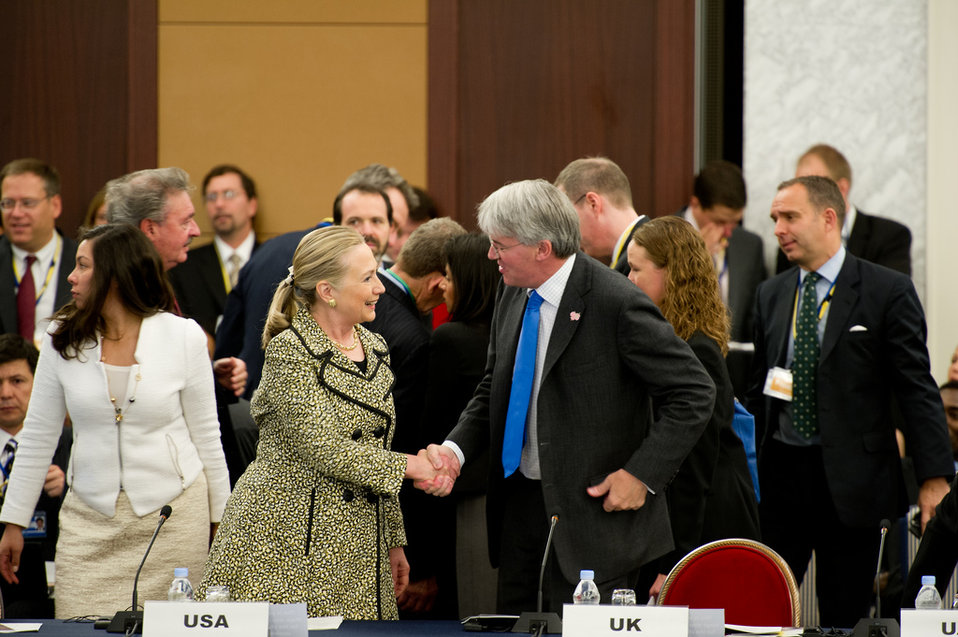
Secretary Clinton Participates in the Tokyo Conference on Japan

U.S. Secretary of State Hillary Rodham Clinton participates in the Tokyo Conference on Afghanistan in Tokyo, Japan, on July 8, 2012.